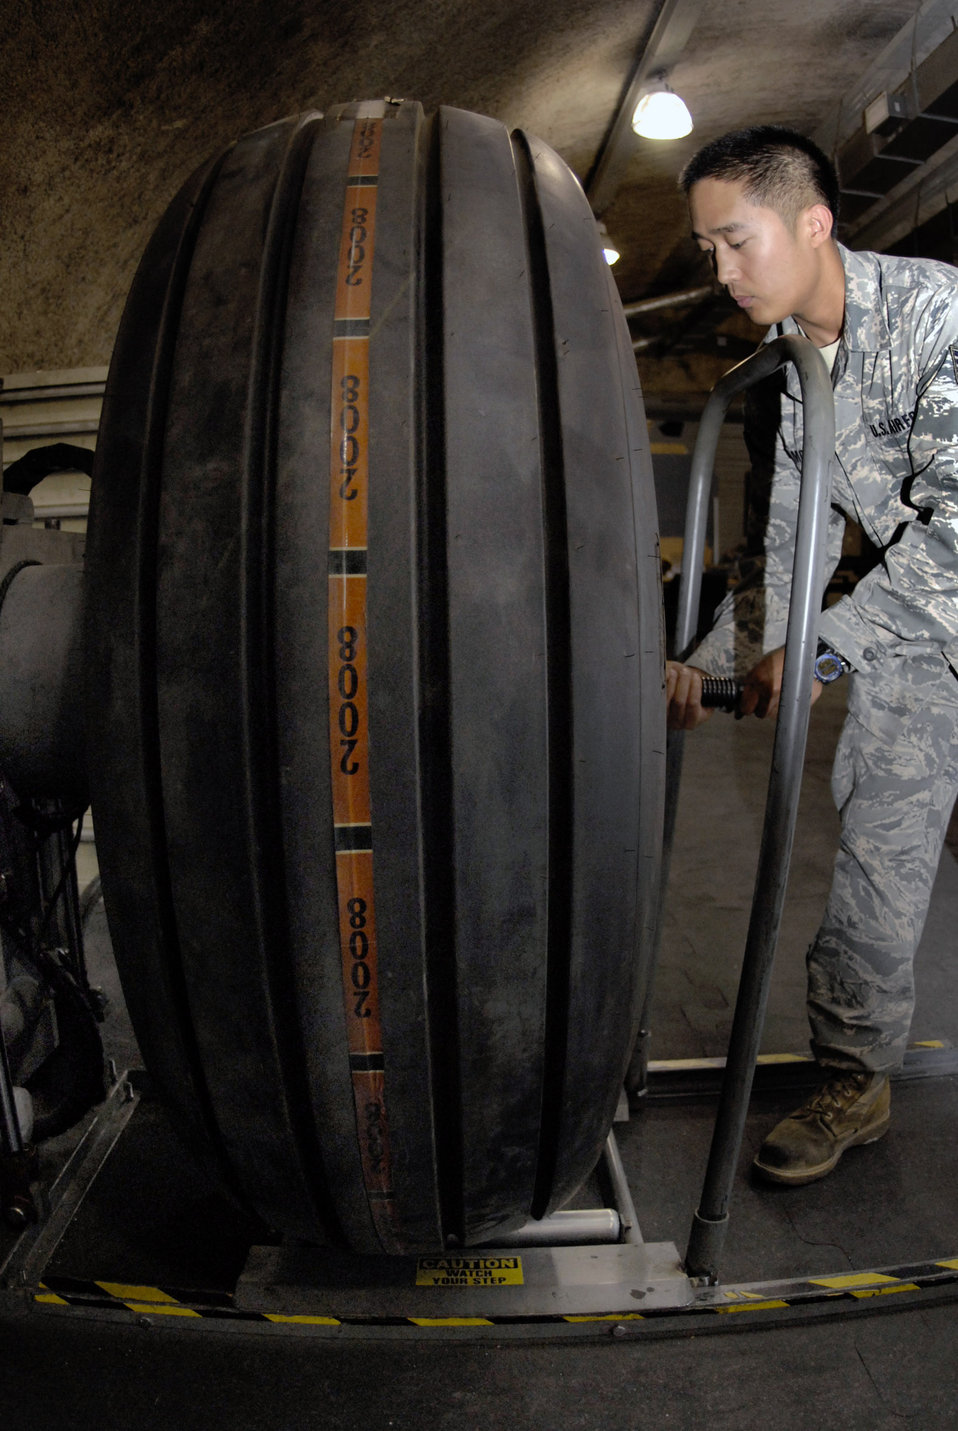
Wheel and tire shop rolls on

Staff Sgt. Ruben Ramones works on a C-130 Hercules wheel April 13 at an air base in Southwest Asia. The base wheel and tire shop supports eight forward operating locations and seven different types of aircraft with a full range of wheel and tire services. Sergeant Ramones is deployed from Yokota Air Base, Japan in support of Operations Iraqi and Enduring Freedom and Combined Joint Task Force - Horn of Africa. He is the wheel and tire shift lead for the 379th Expeditionary Maintenance Squadron.